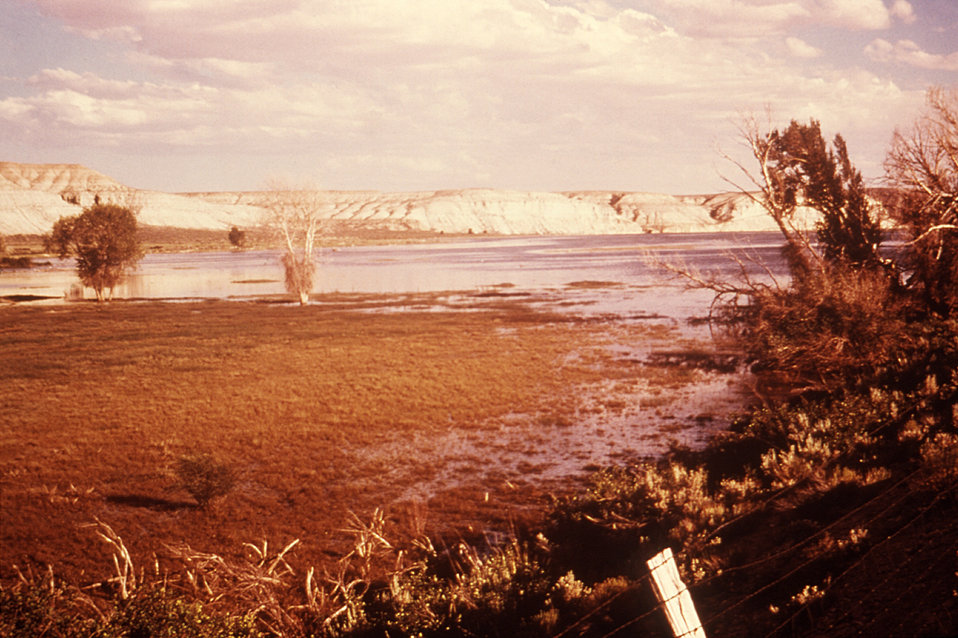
This 1975 photograph depicted the upper reaches of a shallow, vegetated Wyoming reservoir, which was a known Aedes melanimon mosquito habitat, and which was analyzed for the presence of larval organisms.